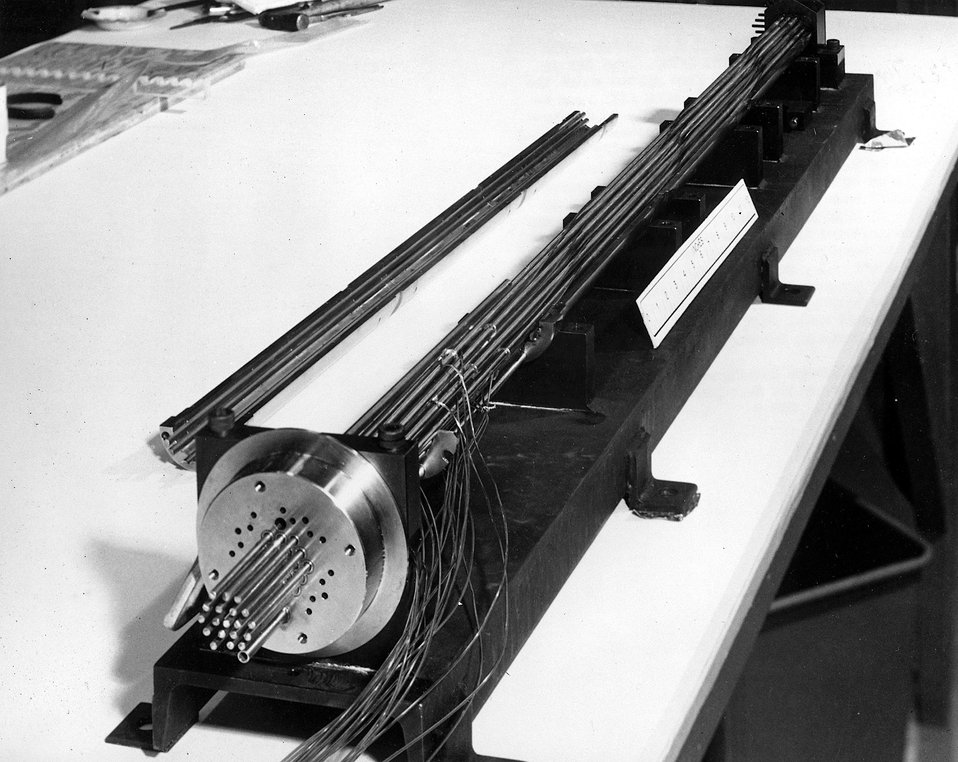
The FFM is an engineering-scale sodium flow system where the thermal-hydraulic behavior of LMFBR fuel rods is tested using electrically heated rods to simulate the fuel. c. 1972